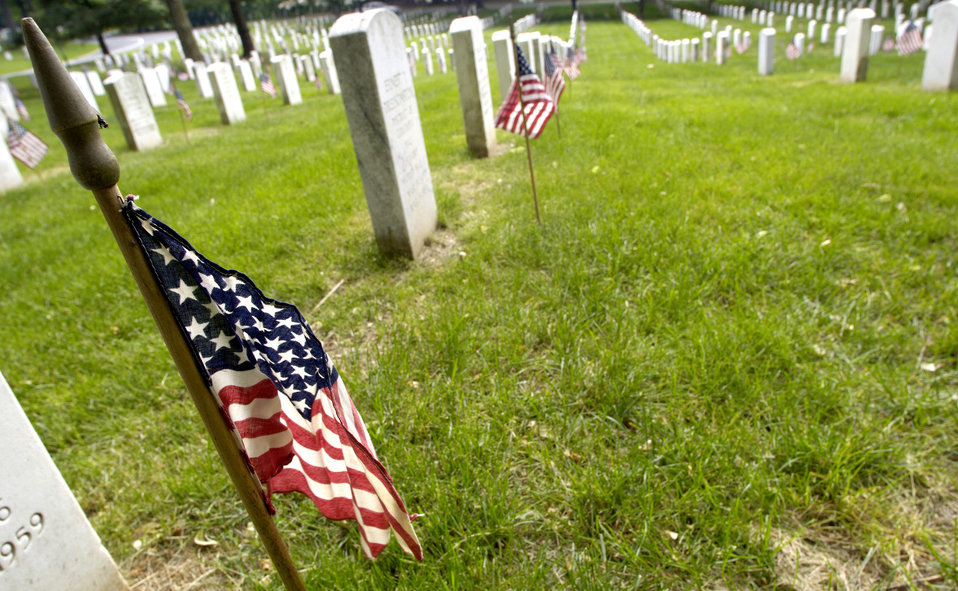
In remembrance

Soldiers, Sailors, Airmen and Marines from across the Washington D.C. area joined forces to place more than 227,000 flags at the front of headstones at Arlington National Cemetery on Thursday, May 25, 2006. The flags will remain at the headstones through Memorial Day.